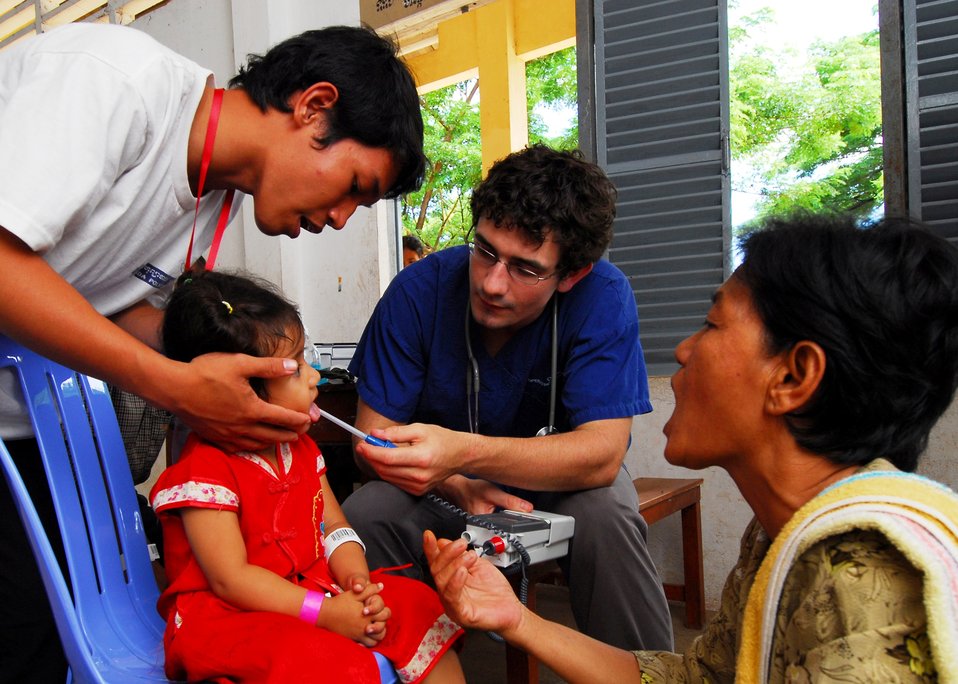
New Zealand Medical Student Philip Drennen Checks a Child’s Temperature

Philip Drennen, a medical student from New Zealand, currently working at Phnom Penh Hospital, checks a child’s temperature on June 24, 2010, in Sihanoukville, Cambodia, during a medical civic action event. The Military Sealift Command hospital ship USNS Mercy (T-AH 19) is in Cambodia in support of Pacific Partnership 2010.